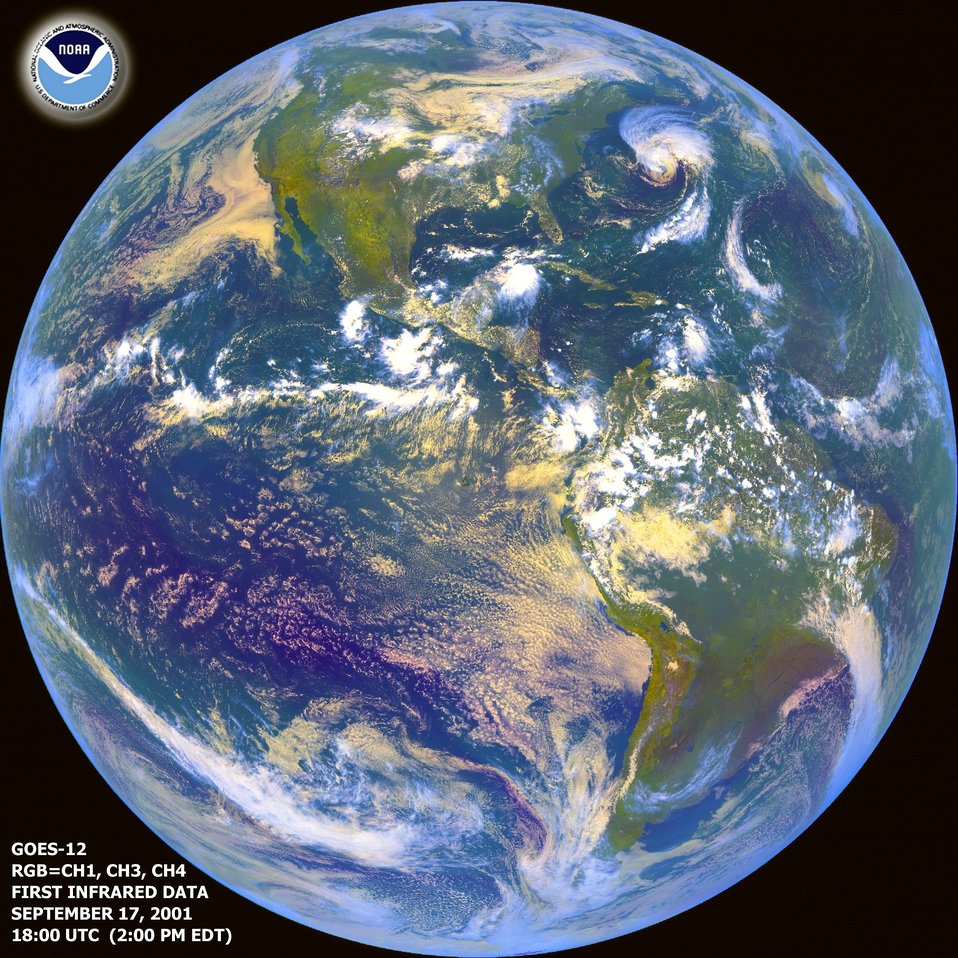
First Infrared data from GOES 12 geostationary satellite.